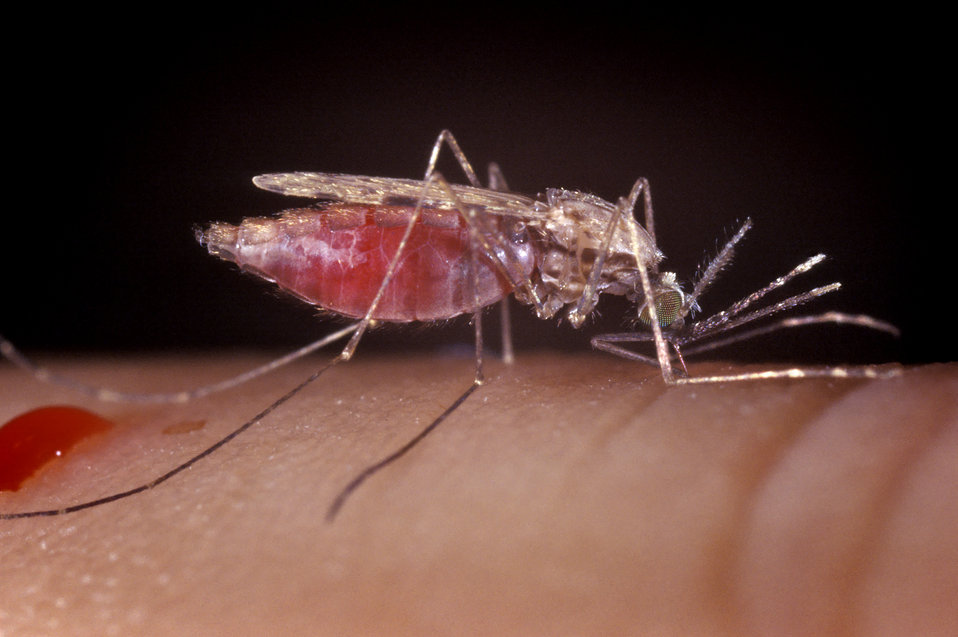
Anopheles gambiae mosquito.